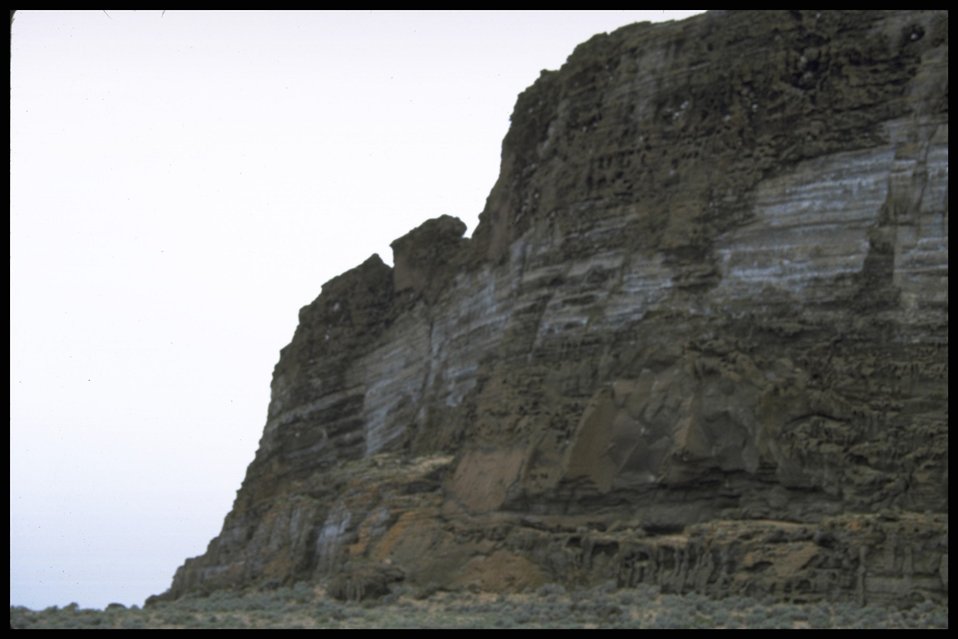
Scenic view, Ft. Rock, Lakeview District.